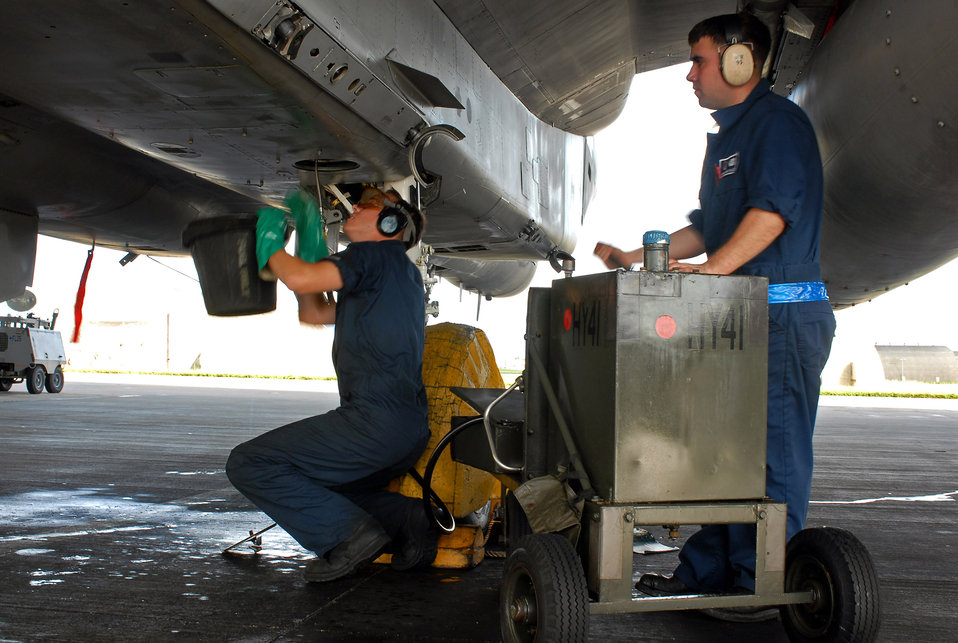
Leaders consider returning maintainers to flying squadrons

Airman 1st Class John Miller (left) and Airman David Tillich check the utilities systems of an F-15 in preparation for aircraft departure to Guam in support of Exercise Valiant Shield Eagle Aug. 5 at Kadena Air Base, Japan. Air Force leaders are considering realigning aircraft maintenance units directly into flying squadrons.